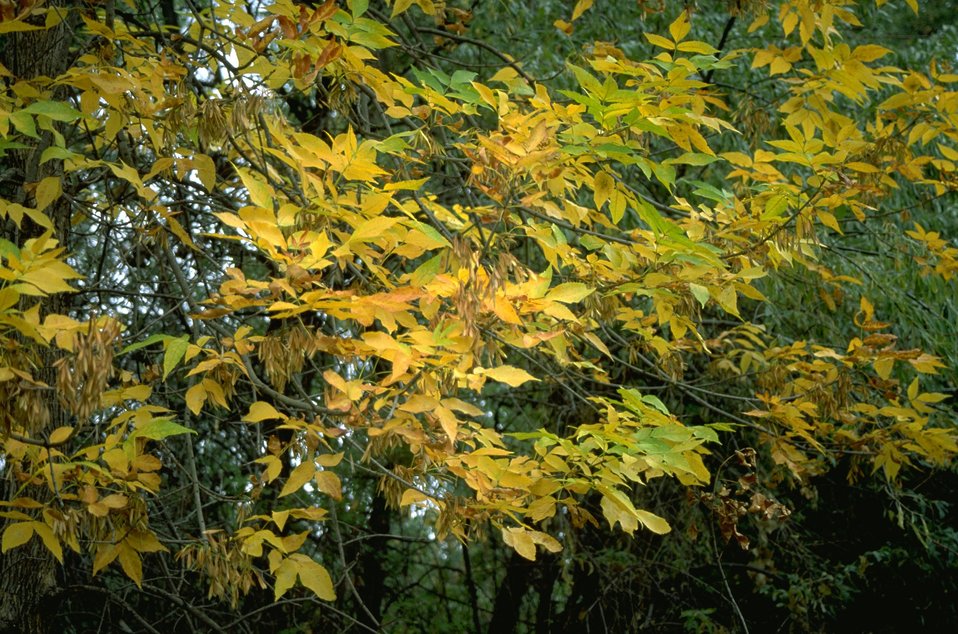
A combination of green and yellow leaves on a tree at Howrey Island Recreation Area